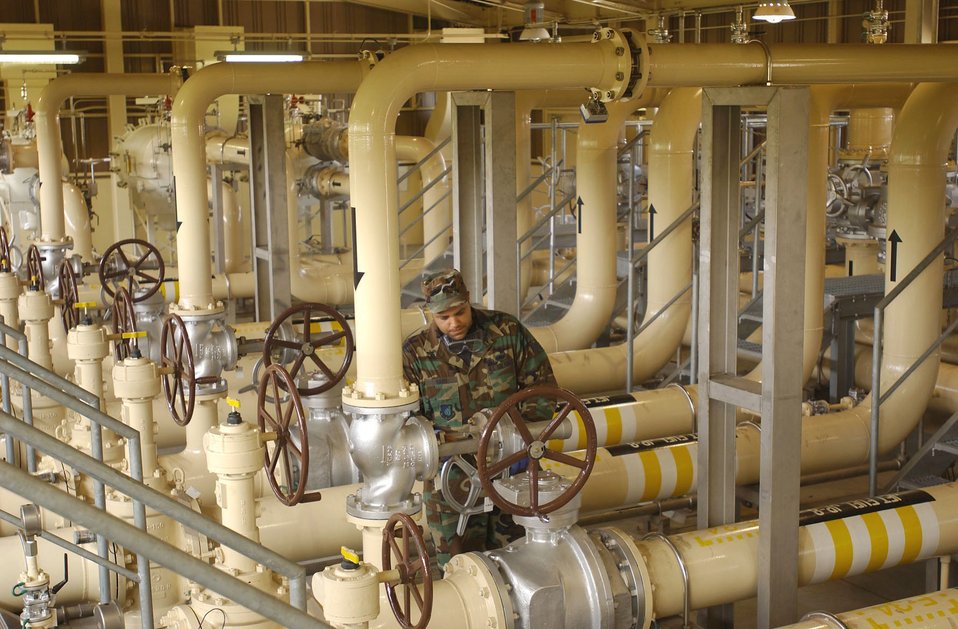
Underground pipeline

Senior Airman Brandon Barr sets up a system that directs fuel through approximately two miles of underground pipeline to different fuel systems throughout the Yokota flightline. Airman Barr is part of the fuels flight which handles Petroleum, Oil and Lubricant.